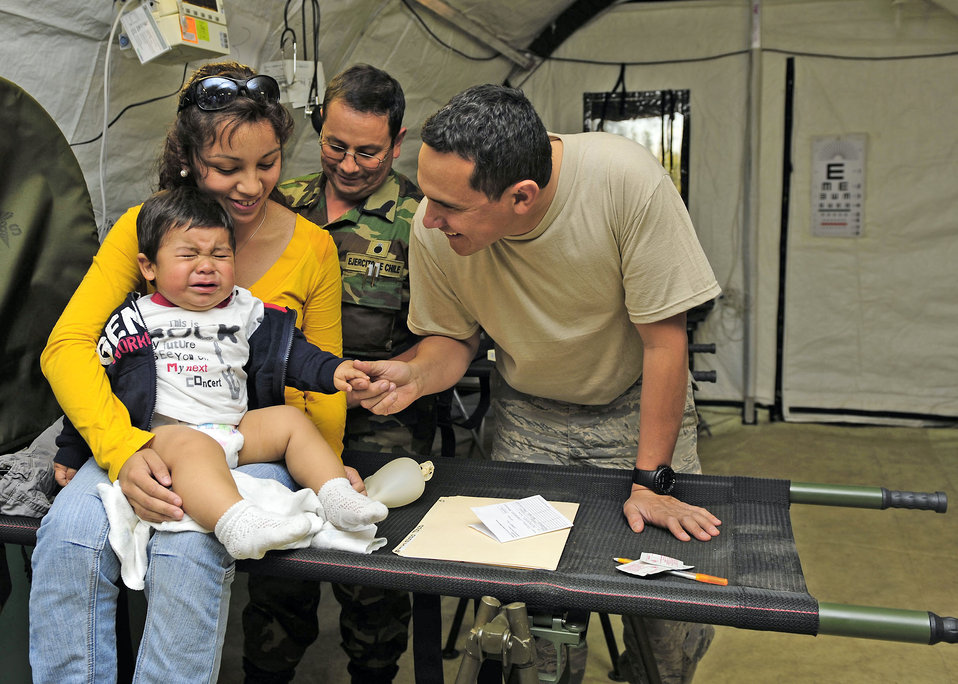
Bridging the language gap

Staff Sgt. Abraham Rodriguez (left) comforts a crying Chilean child at the expeditionary hospital March 14, 2010, in Angol, Chile. Sergeant Rodriguez is a translator for more than 80 members of the Air Force Expeditionary Medical Support Team here. Sergeant Rodriguez is the NCO in charge of the Defense Institute for Medical Operations at the Air Force School of Aerospace Medicine at Brooks City-Base, Texas.